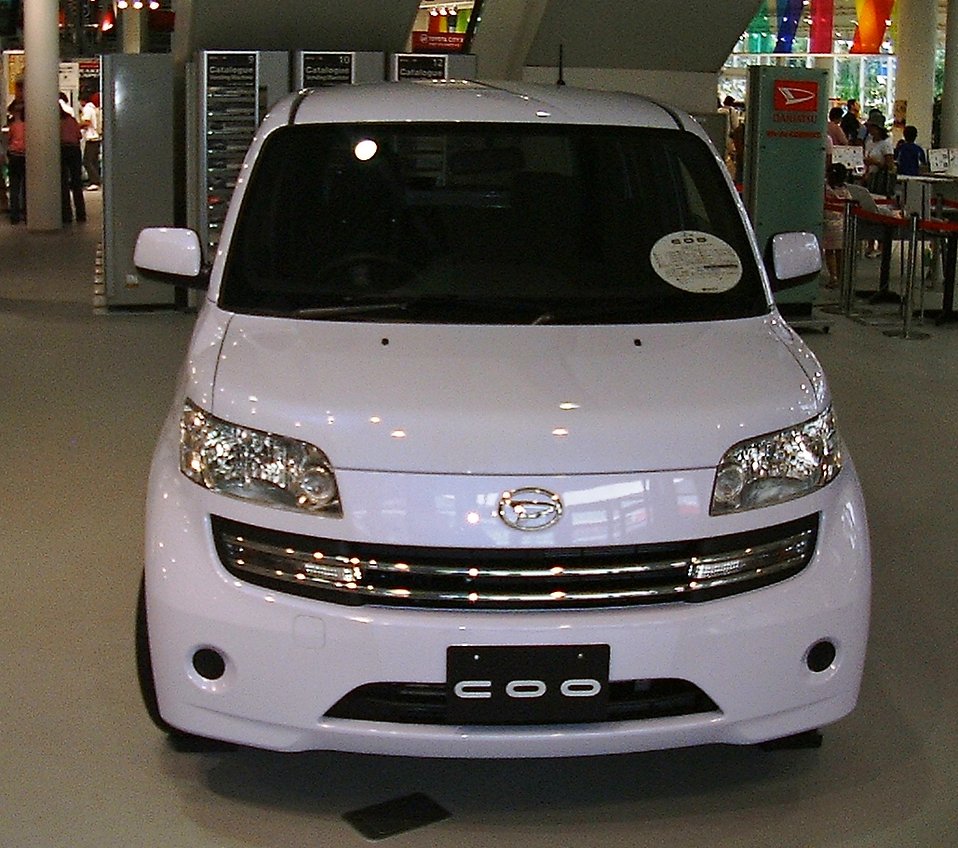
Daihatsu Coo, own work 日本語: クー。本人撮影。